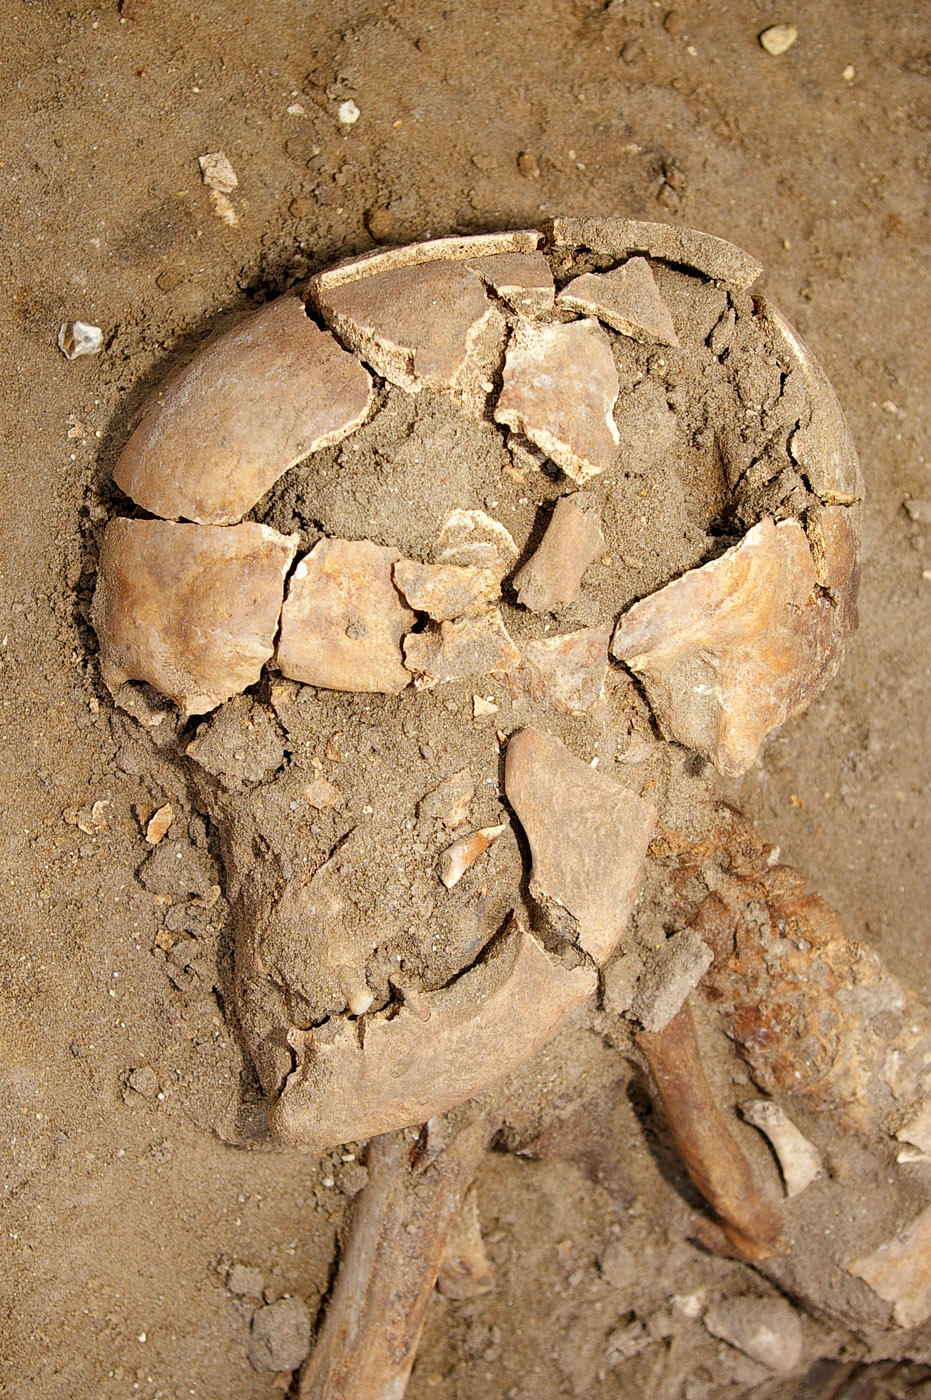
Skeletal remains discovered during dig at Mildenhall

Human remains were discovered March 12 during an archeological dig at the Royal Air Force Mildenhall, England in Beck Row housing area. The skeleton was completely uncovered March 14. It is thought to be up to 2,000 years old. The skeleton will now be studied by archeology specialists to uncover further details about it.